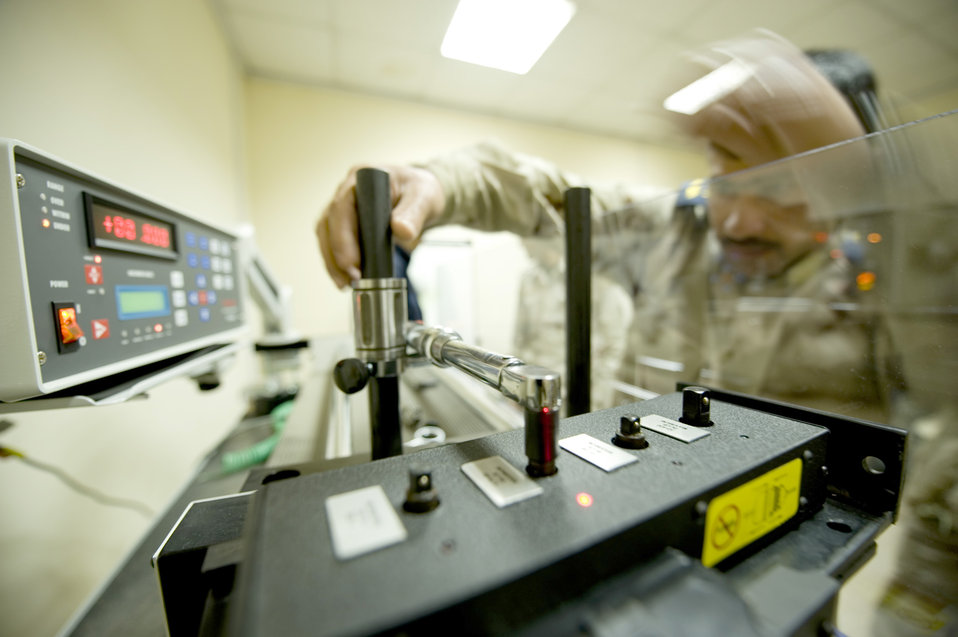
An airman is only as good as his tools

Iraqi airmen train on a torque wrench calibration system Feb. 2, 2011, at New Al-Muthana Air Base, Iraq.